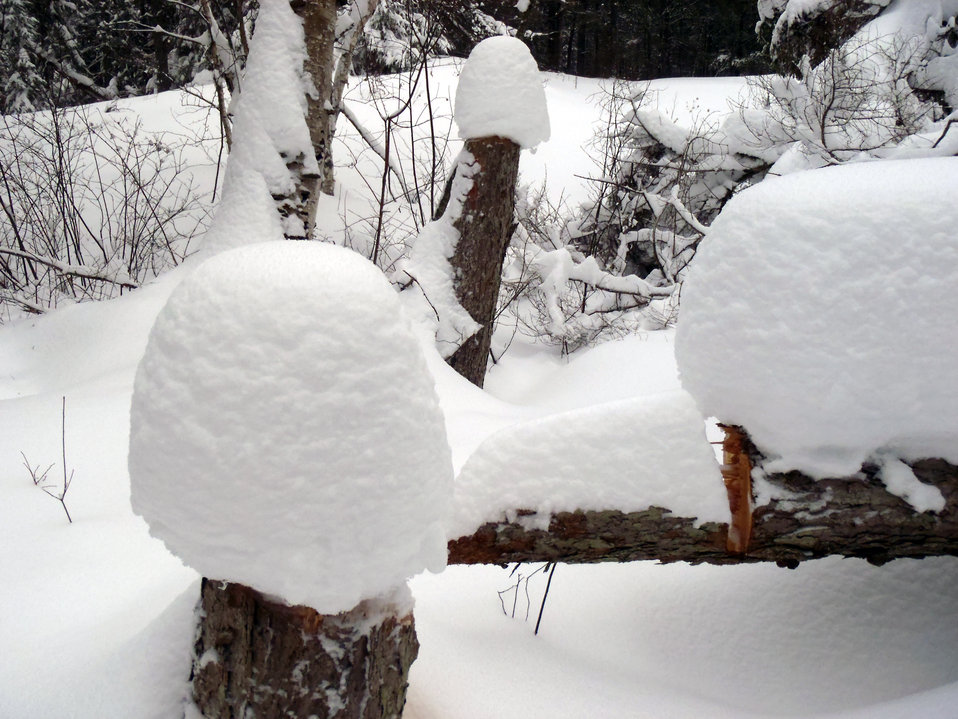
Winter at Seney National Wildlife Refuge